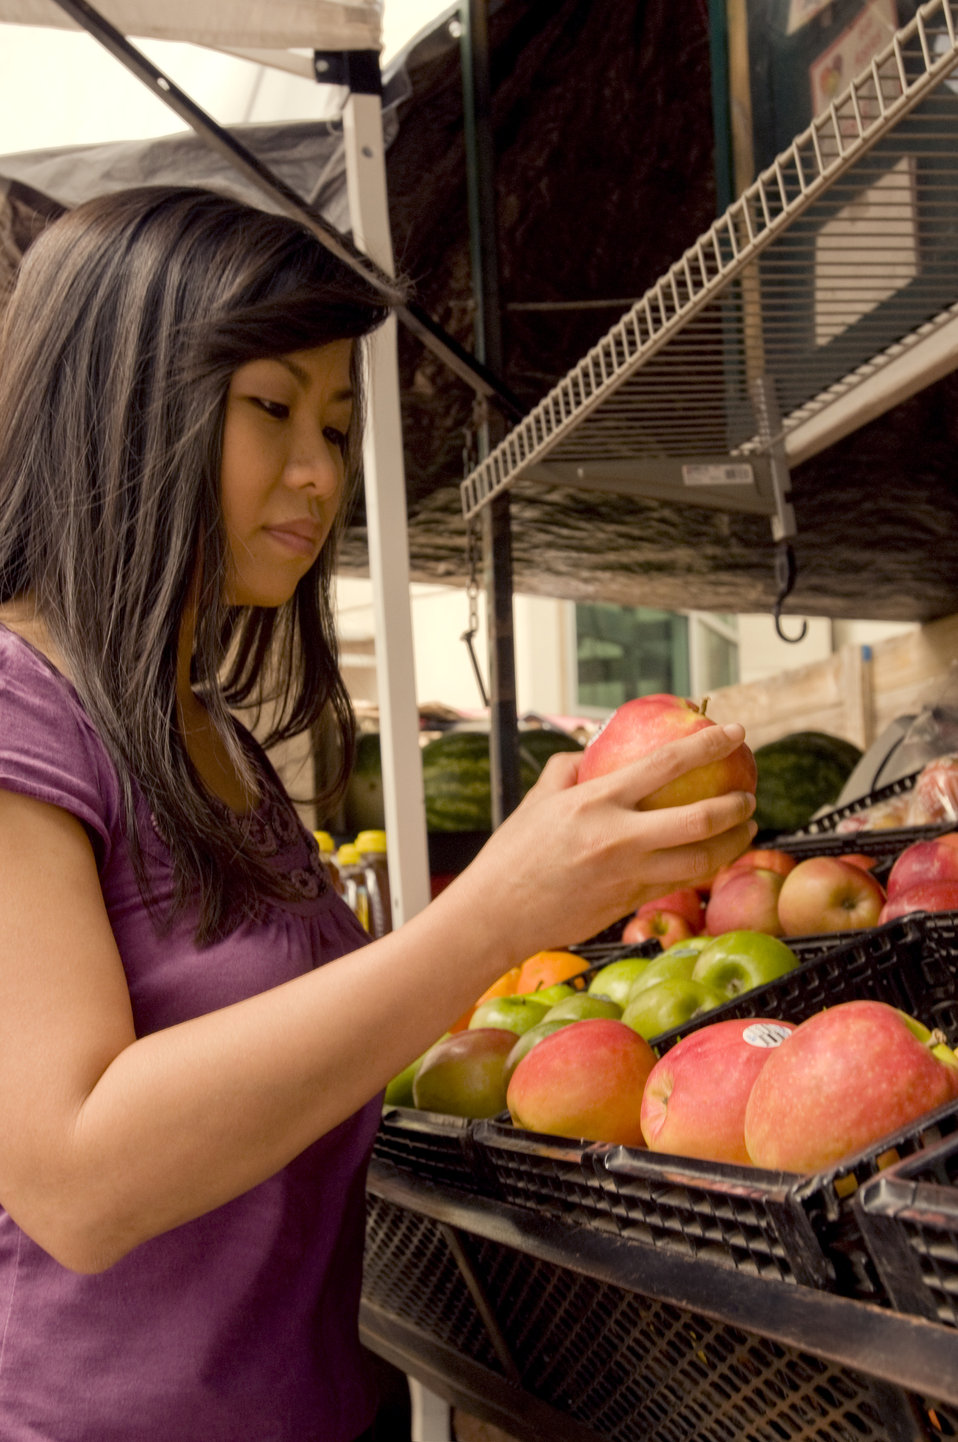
This woman was photographed as she was shopping for groceries at a mobile Georgian farmers market at a point in her activity where she was picking out a nutritionally-rich apple from a basket container in the market's produce section..